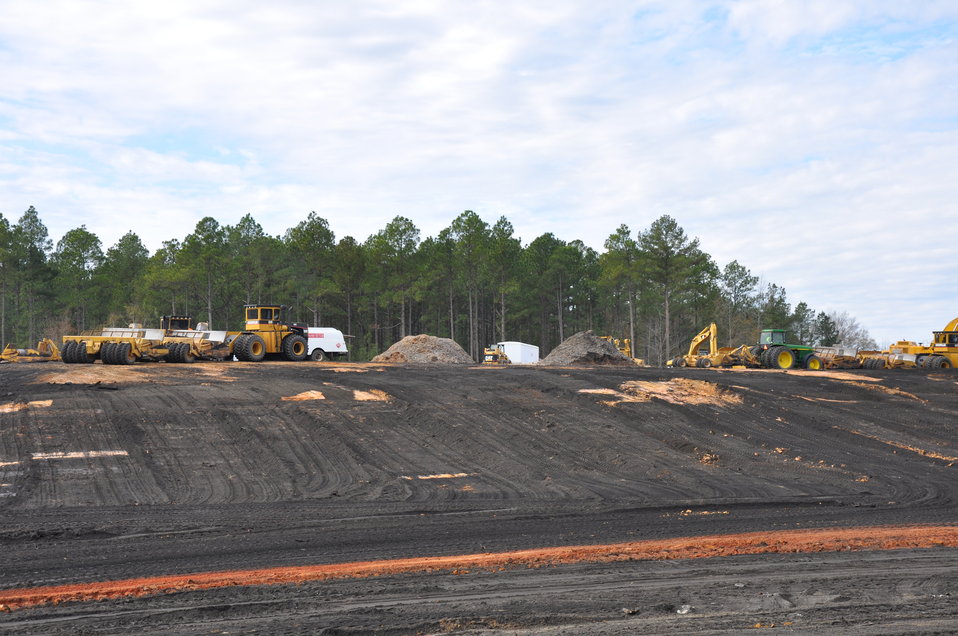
P Ash Basin - During

At the P Area Ash Basin, Recovery Act workers removed about 35 acres of vegetation on and around the 14-acre manmade earthen basin to prepare for remediation. Next, they consolidated ash inside the basin that had spread in the area from former P Area Powerhouse operations, which ended in 1991. Workers then prepared a clean soil and sod cover, and planted seedlings.
The vegetative layer prevents precipitation from infiltrating the basin’s ash residues and entering the groundwater. About 1,500 feet of erosion-control fencing also was installed.